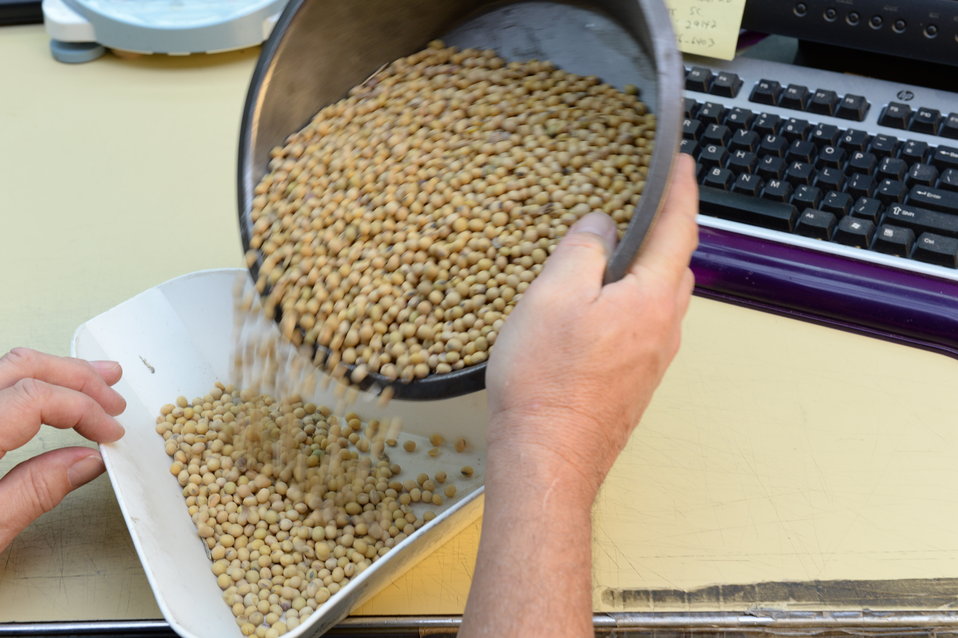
U.S. Department of Agriculture (USDA) Grain Inspection, Packers and Stockyards Administration (GIPSA) Federal Grain Inspection Service (FGIS) employee examines grain samples at the FGIS inspection laboratory in New Orleans, LA on Monday, Nov. 18, 2013.